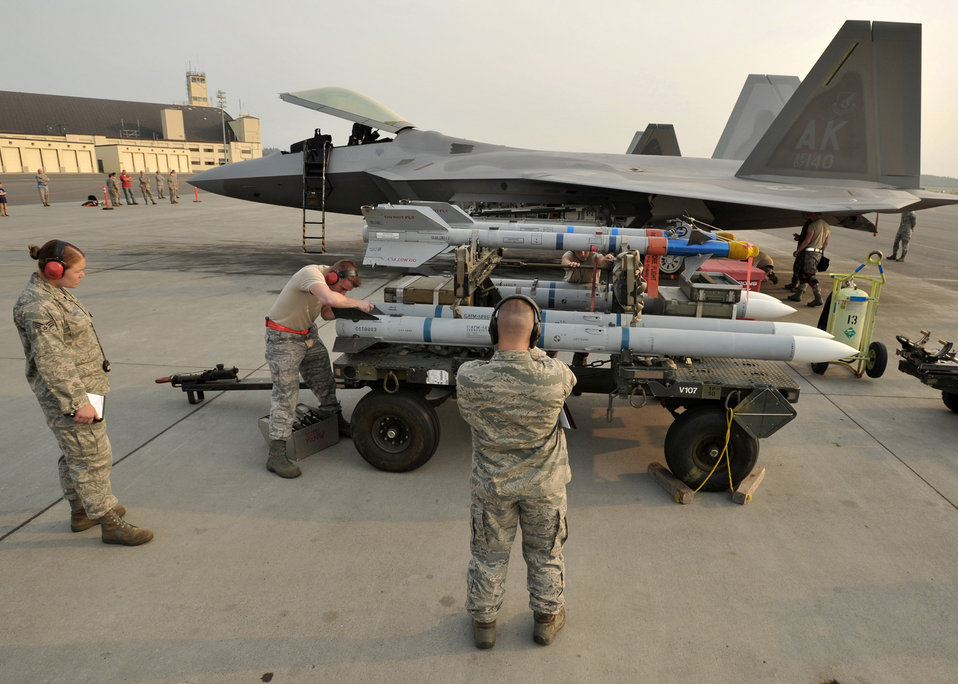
Alaskan load crews compete

Airman 1st Class Daniel Kok installs a wing on a AIM-120 missile while evaluators Senior Airman Meghan Jarvis, 3rd Maintenance Operations Squadron, and Master Sgt. Francis Clement, 3rd Maintenance Group, look on July 10 at Elmendorf Air Force Base, Alaska. Airman Kok is assigned to the 3rd Aircraft Maintenance Squadron.